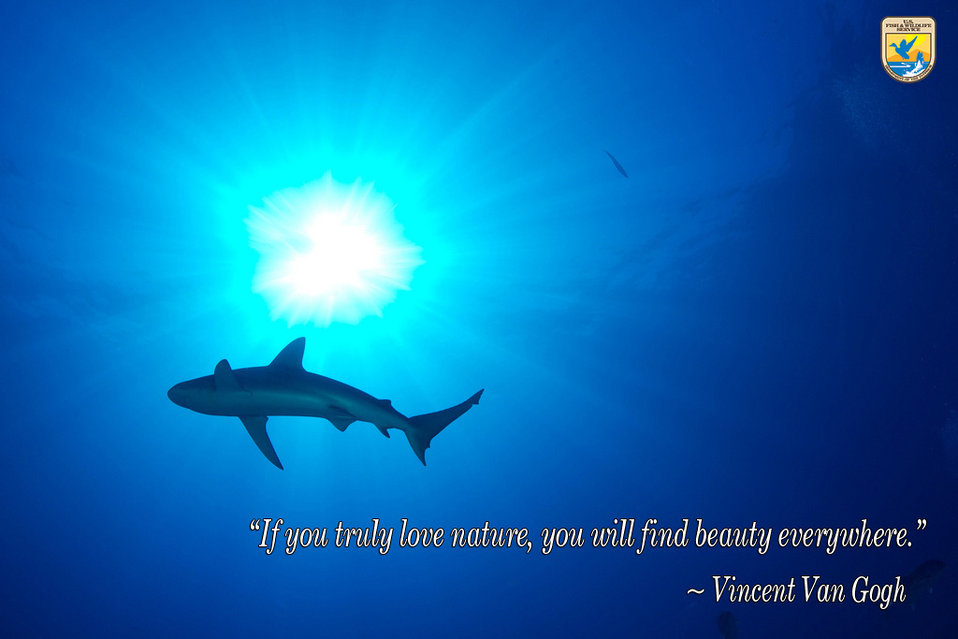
Get Inspired!

Download, share and enjoy!